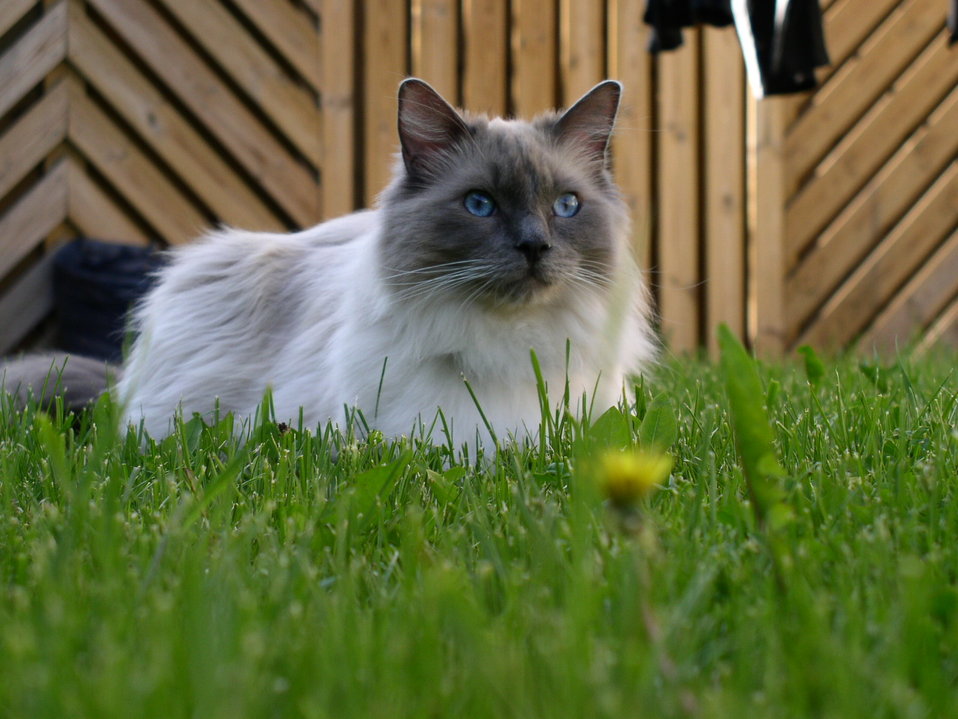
Ragdoll, blue mitted